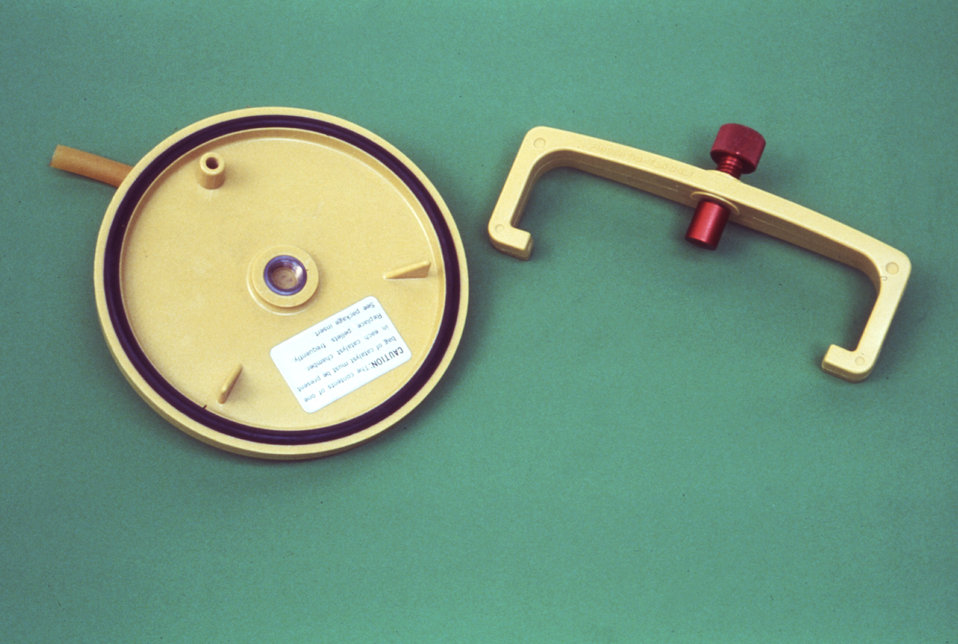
This is a BBL� anaerobe jar lid with its accompanying O-ring and clamp used to assemble the anaerobic transport system.